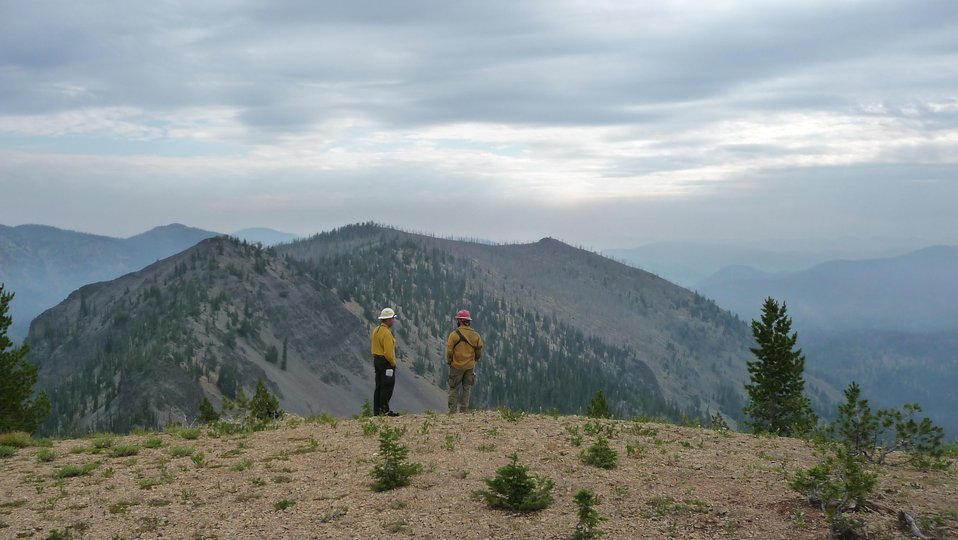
Firefighters observe the behavior of the Thunder City Fire. The Thunder City Fire in the Payette National Forest near Stibnite, ID began on Jul. 19, 2013 by lightning and has consumed approximately 1,520 acres and is approximately 15% contained.